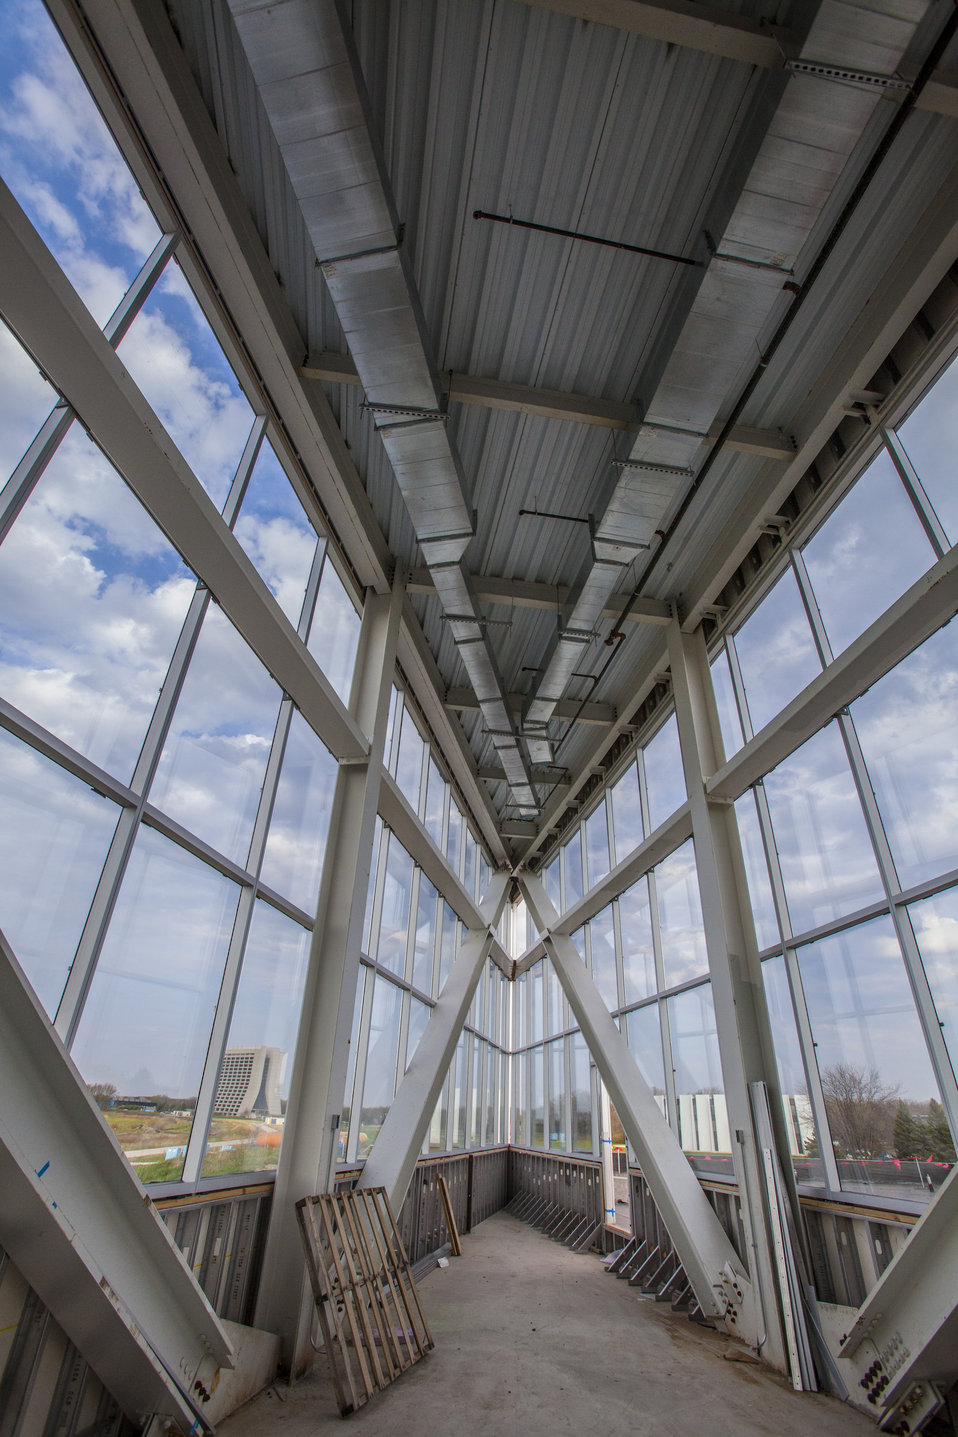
Construction of the Illinois Accelerator Research Center (IARC) Office, Technical and Education Building.

The IARC is a new accelerator research facility being built at Fermi National Accelerator Laboratory. It will provide a state-of-the-art facility for research, development and industrialization of particle accelerator technology. It will develop partnerships with private industry for the commercial and industrial application of accelerator technology for energy and the environment, medicine, industry, national security and discovery science.